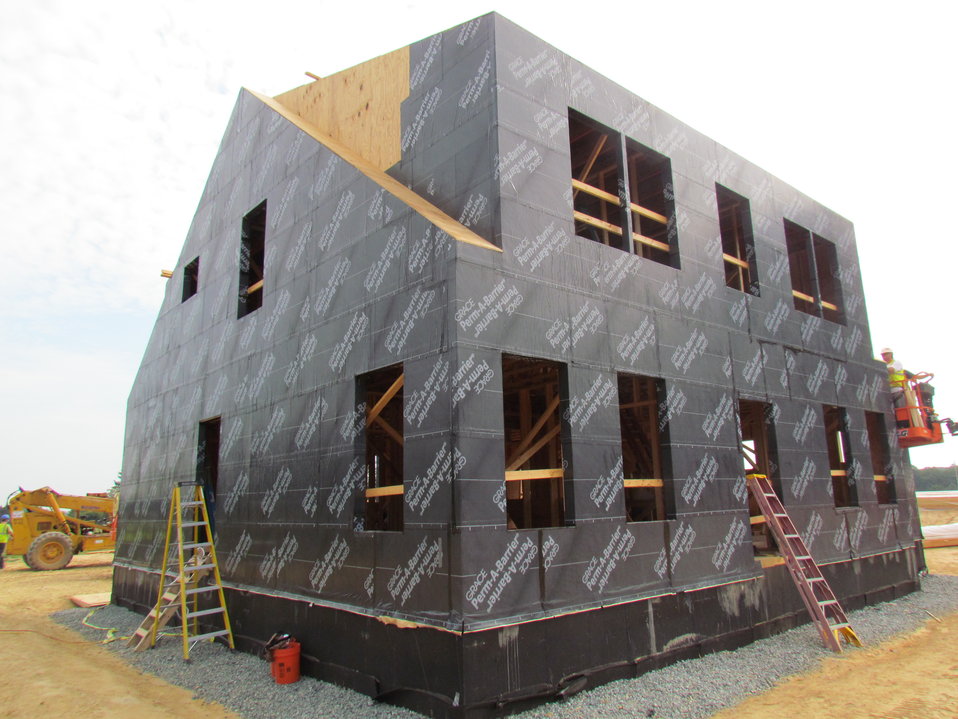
Net-Zero Energy Residential Test Facility - Photo showing air/moisture barrier installed on north/east sides of facility.